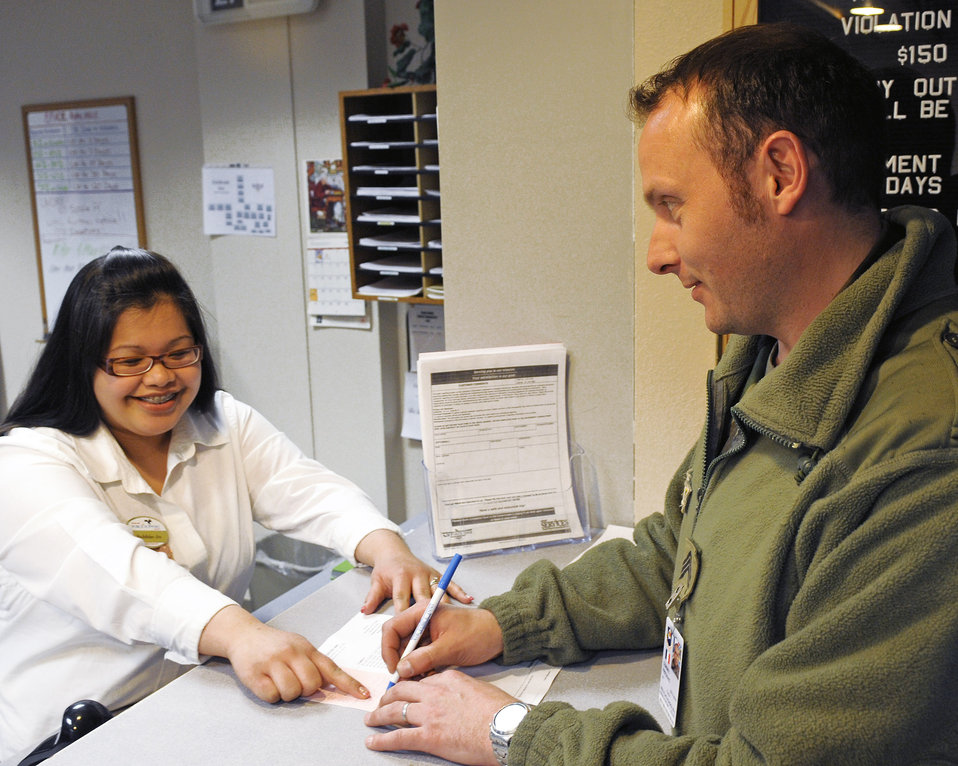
Force Support Squadron takes on Red Flag-Alaska

Bobbie-Jo Mafnas, a 354th Force Support Squadron guest services representative at the Gold Rush Inn on Eielson Air Force Base, Alaska, assists Sergent-chef Frederic Cornec April 27. Sergent-chef Cornec is the lead crew chief for the French air force contingent here for Red Flag-Alaska 09-2.